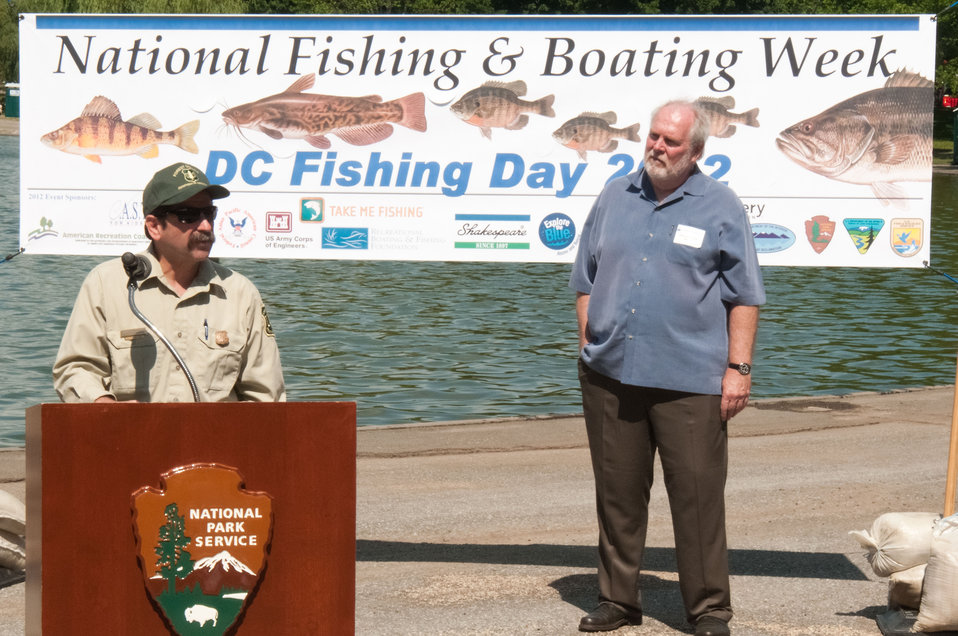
U.S. Forest Service Associate Deputy Chief Jim Pena explains the outdoor recreation opportunities offered by the Forest Service during National Fishing Day at Constitution Gardens in Washington, D.C. on Monday, June 4, 2012 as National Oceanic and Atmospheric Administration Assistant Administrator, David Kennedy listens. The Forest Service along with many Federal agencies, non-profit organizations and outdoor recreation companies demonstrated the joy of fishing to local elementary school students.